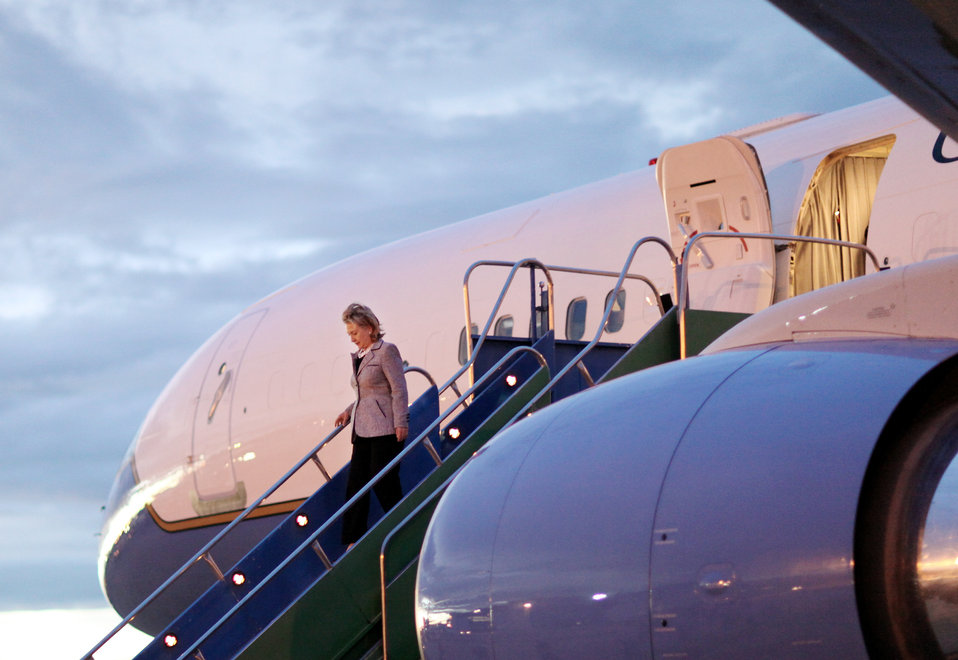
Secretary Clinton 'Wheels Down' in Brazil

U.S. Secretary of State Hillary Rodham Clinton arrives in Brasilia, Brazil March 2, 2010.